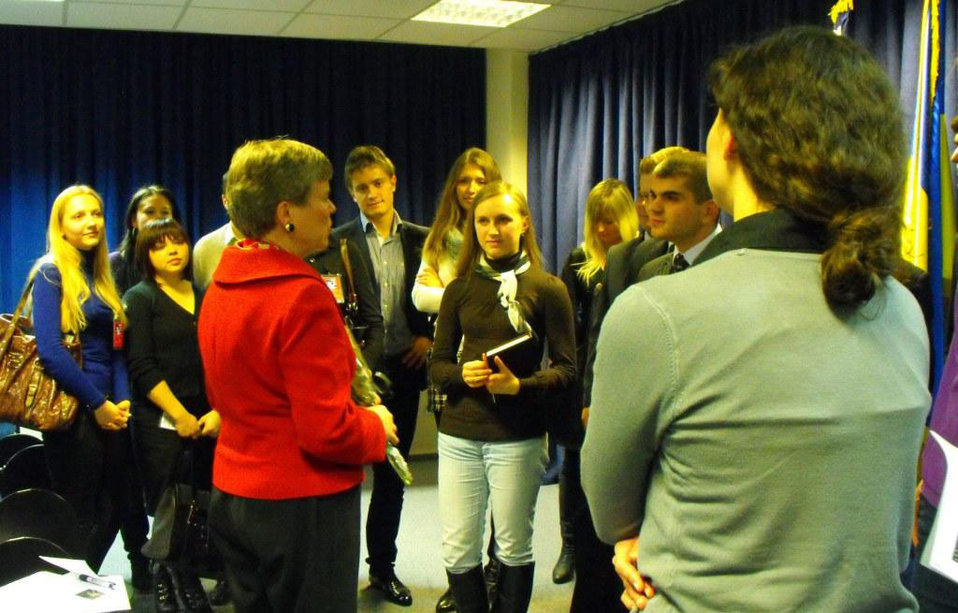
Assistant Secretary Gottemoeller Meets With Students

U.S. Assistant Secretary of State for the Bureau of Arms Control, Verification and Compliance Rose Gottemoeller meets with students in Kyiv, Ukraine, on February 7, 2011.